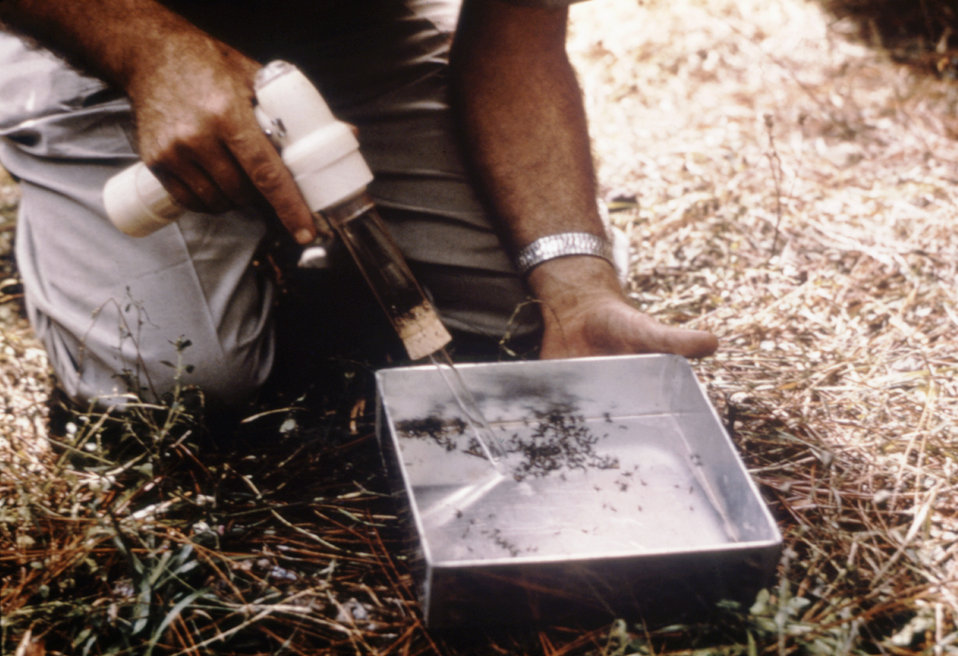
This field researcher is shown removing mosquitoes with a mechanical aspirator from the tray of a horse stable mosquito trap.